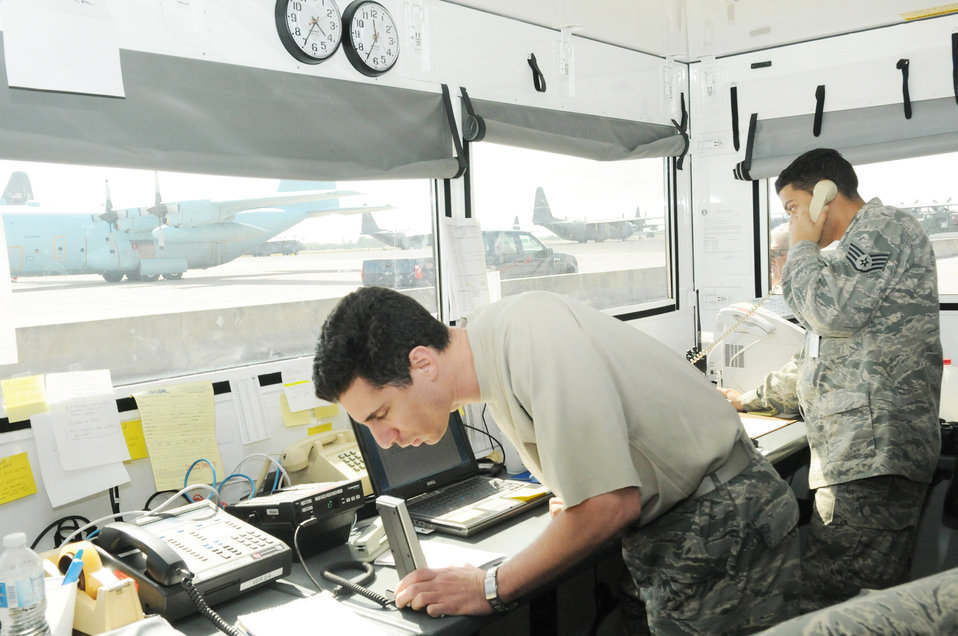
Operation Unified Response

Staff Sgt. Johnathan Concepcion tracks flights moving in and out of Homestead Air Reserve Base, Fla., heading to Haiti Jan. 23, 2010. Sergeant Concepcion is a command and control technician assigned to the 512th Airlift Control Flight.